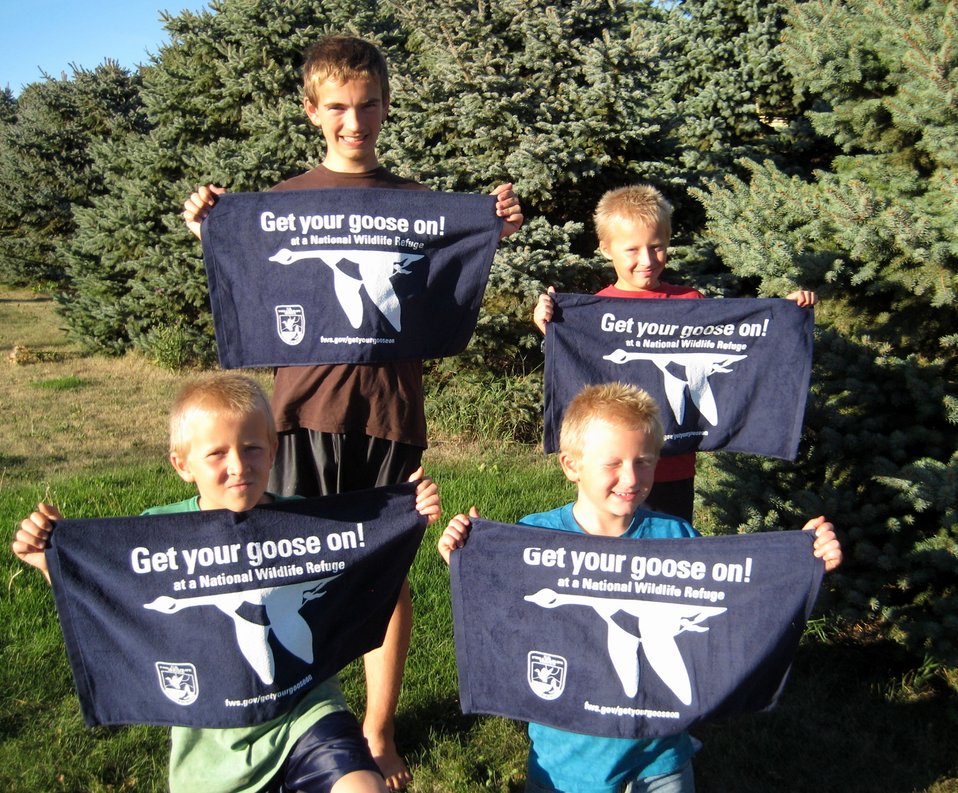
Get Your Goose On!

Taken at Tewaukon National Wildlife Refuge.